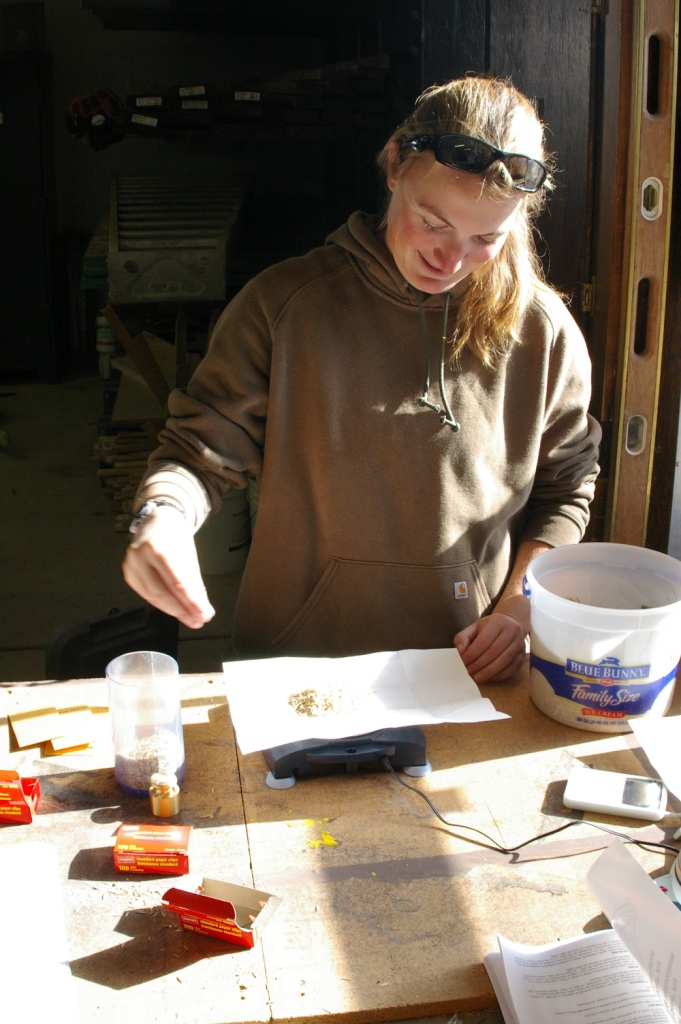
Weighing Seed

Jaime Allen measures out a precise amount of native grassland seed to planted into a study plot at Ouray National Wildlife Refuge.